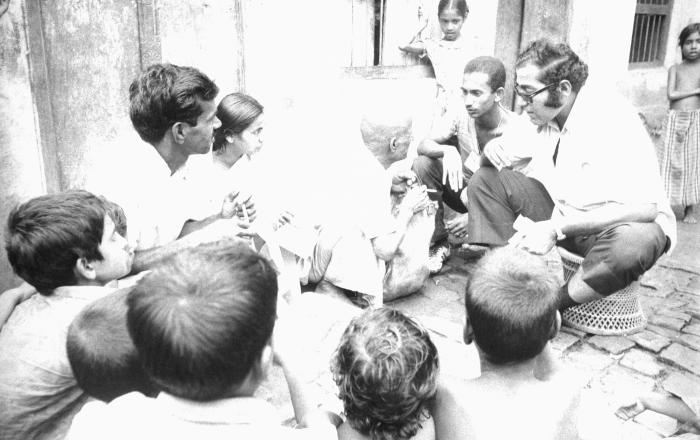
This photograph depicted World Health Organization (WHO) epidemiologist Dr. Ali Mourad (far right, wearing glasses), surrounded by community members while discussing the contents, and protocols associated with the 'smallpox containment book' with a community volunteer. The containment book recorded all of the names of anyone living in, or near an infected home, and subsequently all those listed were vaccinated against smallpox. Those vaccinated were followed until a 'successful' vaccination was observed.